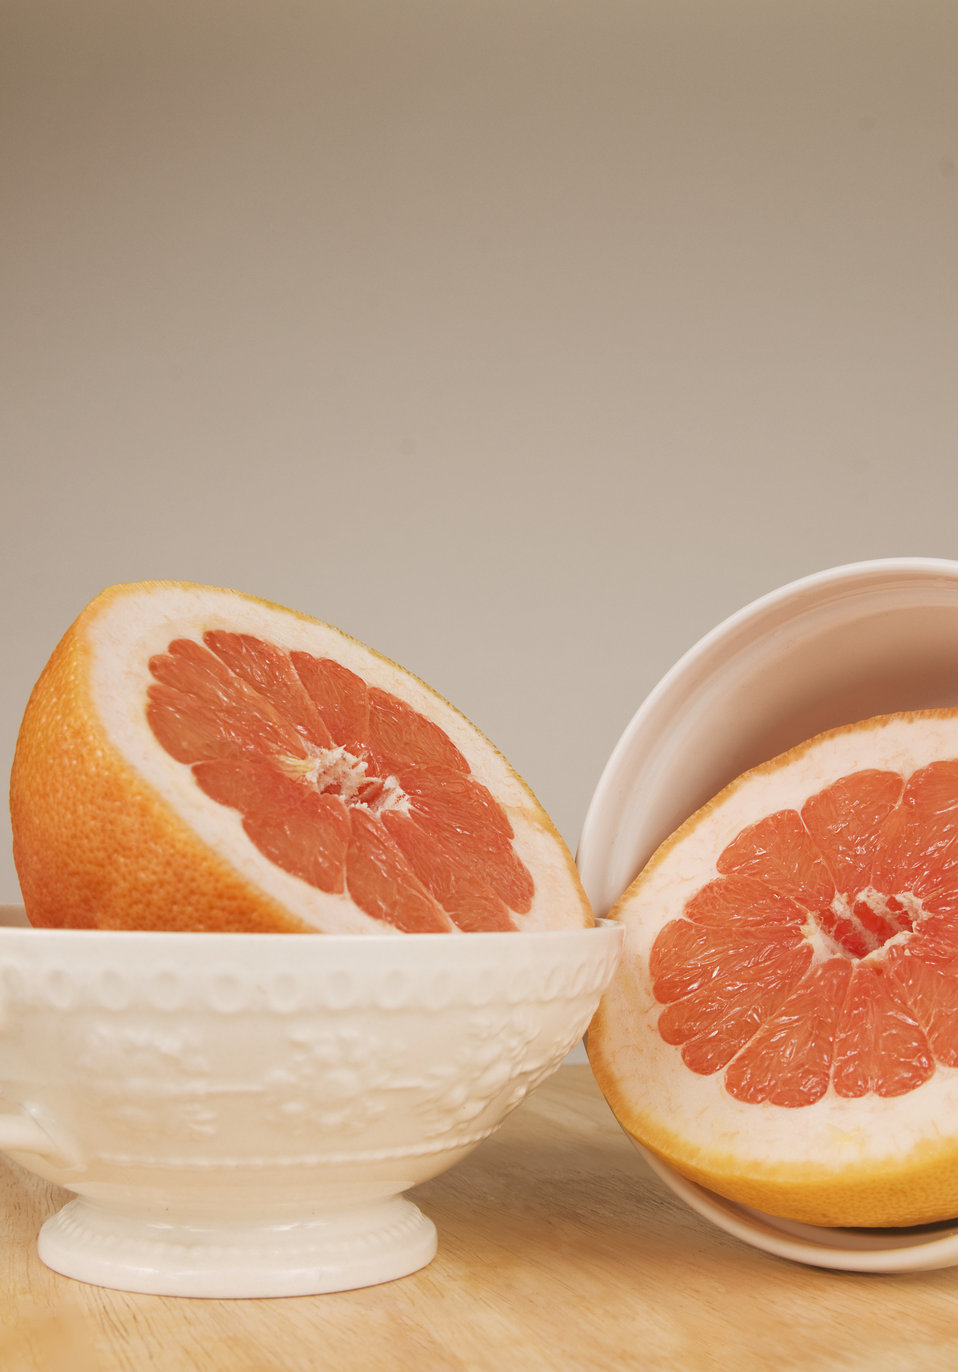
Grapefruits

This image depicts a clean wooden tabletop, atop which were two whole ceramic bowls, each containing a half of a grapefruit. In this setting, the bowl at right had been set on its side, still containing the fruit. The halved fruits revealed their juicy, nutrient-rich red-orange interior, which was encased in a thick yellow-orange skin.